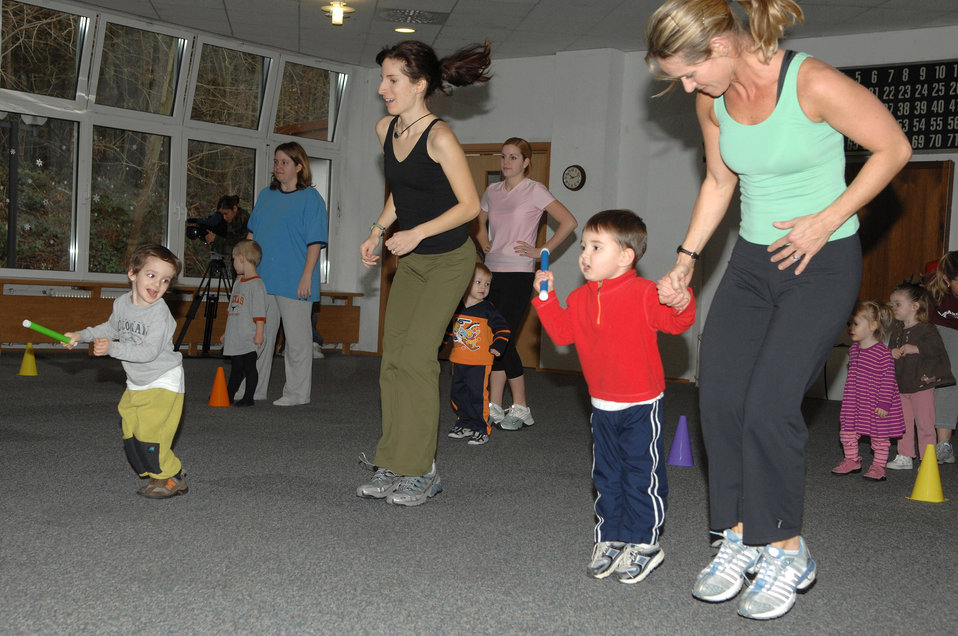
Children, parents get fit together

Renee Champagne, (right), does a fitness activity with her son, during the Mommy and Me Yoga and Fitness class, Jan.18, at the Vogelweh Community Center. Ms. Champagne is the instructor for the class.